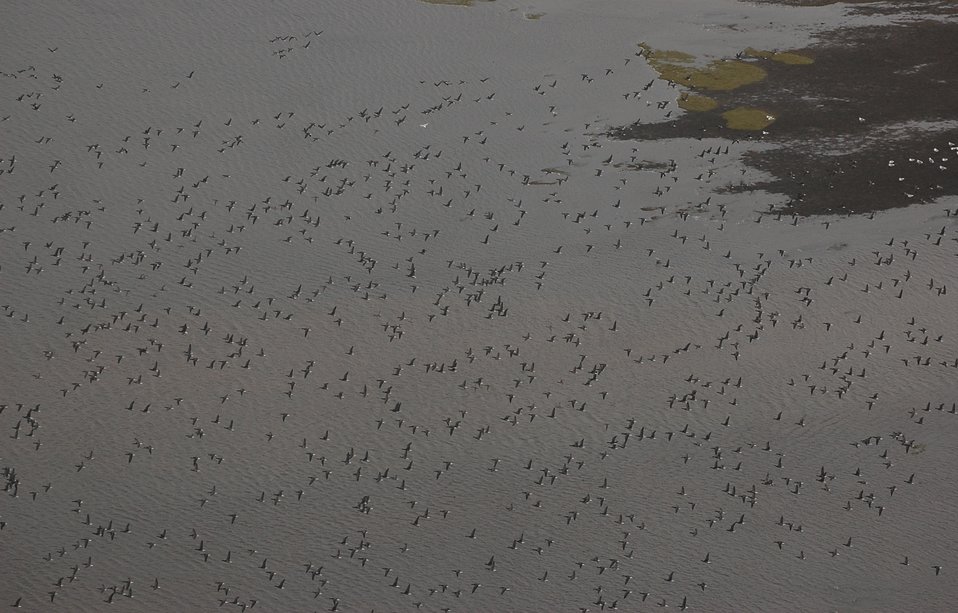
Brant at Izembek Lagoon

Izembek National Wildlife Refuge